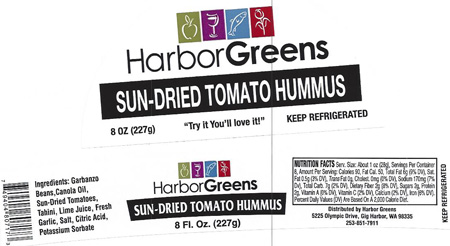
RECALLED – Hummus

July 16, 2013 – Product Recall – Hagee Foods Inc. dba Penny's Salsa Inc. Recalls Hummus Products Because of Possible Health Risk.